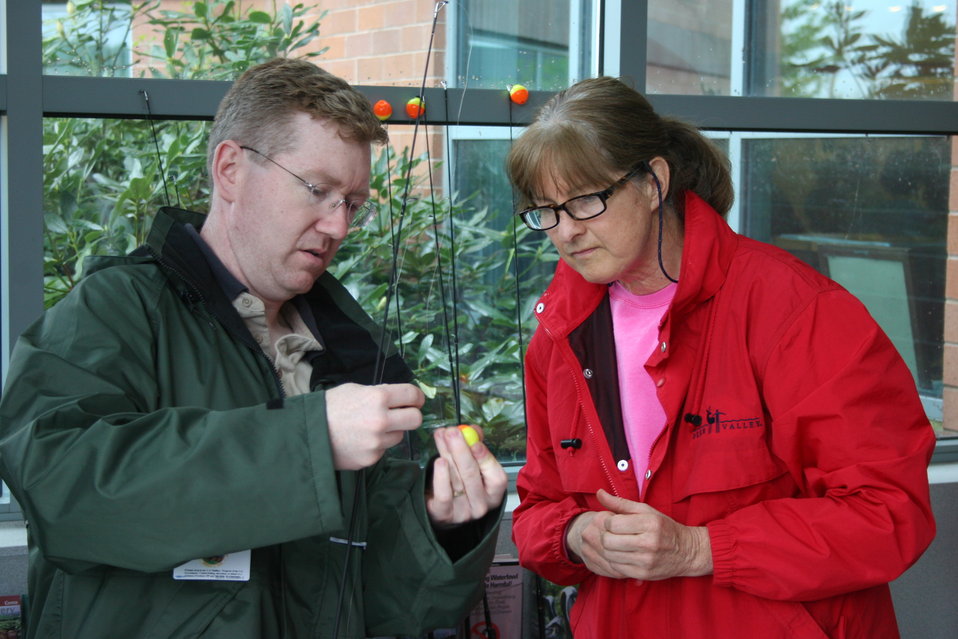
Baiting the hook

Fishing event at U.S. Fish and Wildlife Service Regional Office in Hadley, MA